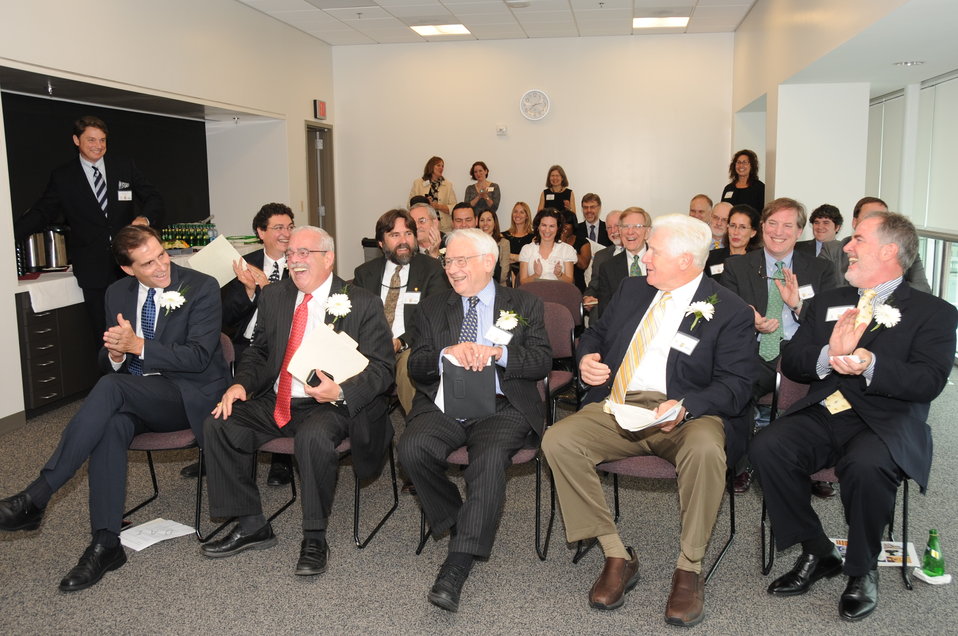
Together in Conservation

Memorandum of Understanding Signing Ceremony with U.S. Fish and Wildlife Service, Smithsonian Institution, and George Mason University. October 26, 2012